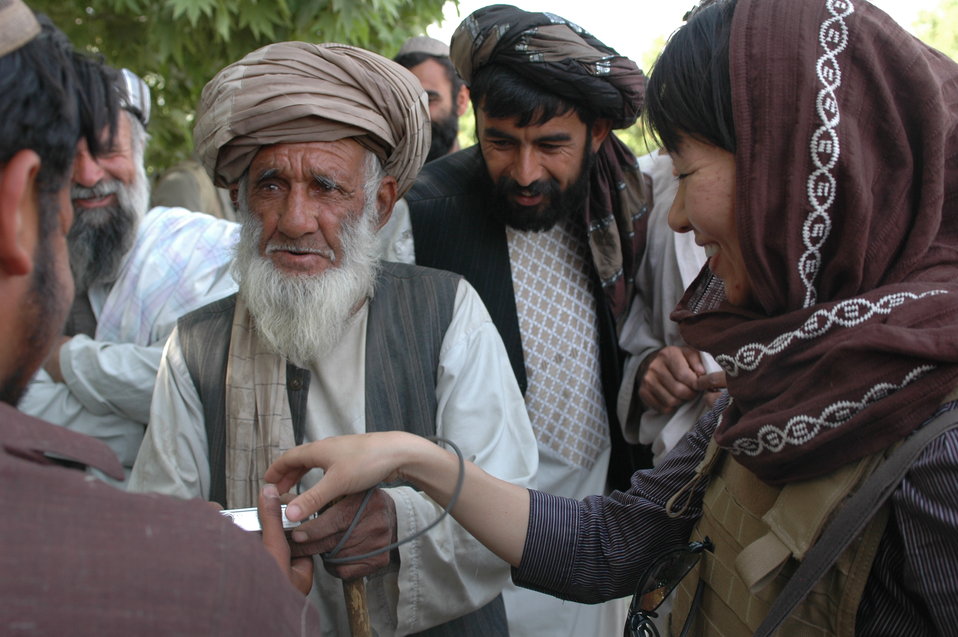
Dr Shah Visits Argandab April 10, 2010